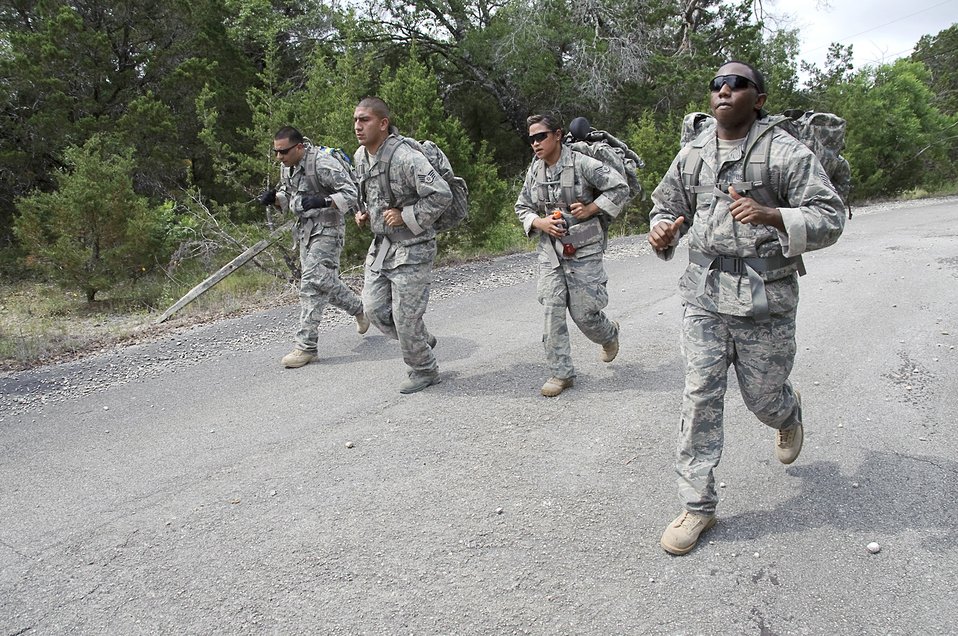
National Police Week 2010

Staff Sgts. Derek Adas, Jacento Nunez, Michelle Casas and Tristan Nunn pick up the pace on the downhill leg during the obstacle course and ruck march event held May 12, 2010, at Camp Bullis, Texas, during National Police Week. The event was sponsored by Joint Base San Antonio installations and open to all area police organizations.